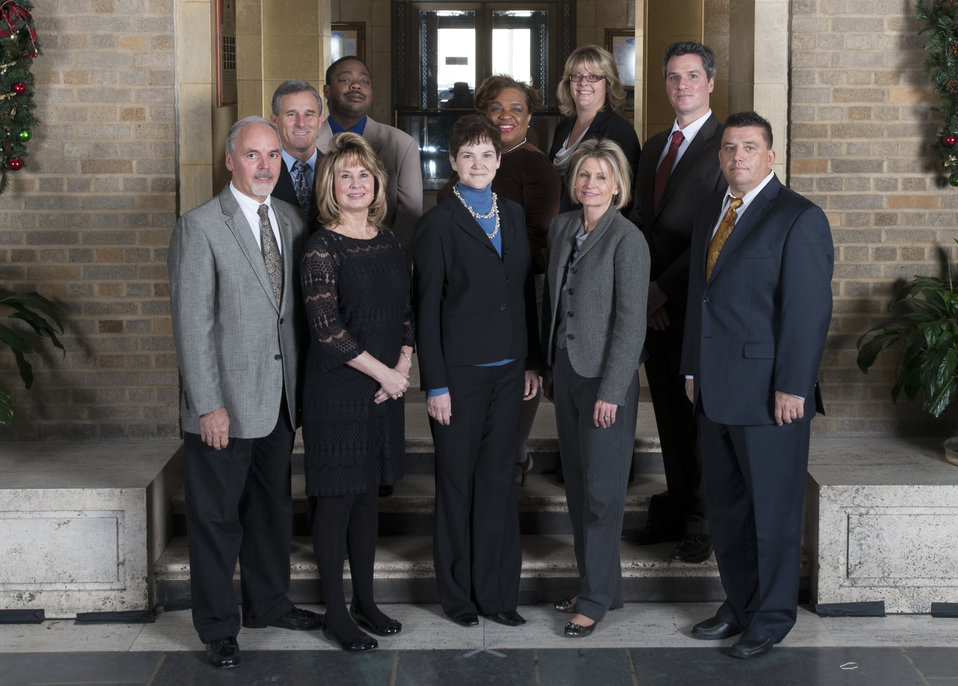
Agriculture Deputy Secretary Krysta Harden stands with the Computer Assisted Personal Interview Program Team, National Agricultural Statistics Service (NASS) on the patio at the U.S. Department of Agriculture (USDA) in Washington, D.C. on Wednesday, Dec. 11, 2013. The team received the Secretary’s Honor Award for innovation and ingenuity in deploying mobile technology to centralize structures and systems, reduce resource requirements, and flexibly meet the National Agricultural Statistic Service (NASS) and USDA business needs.